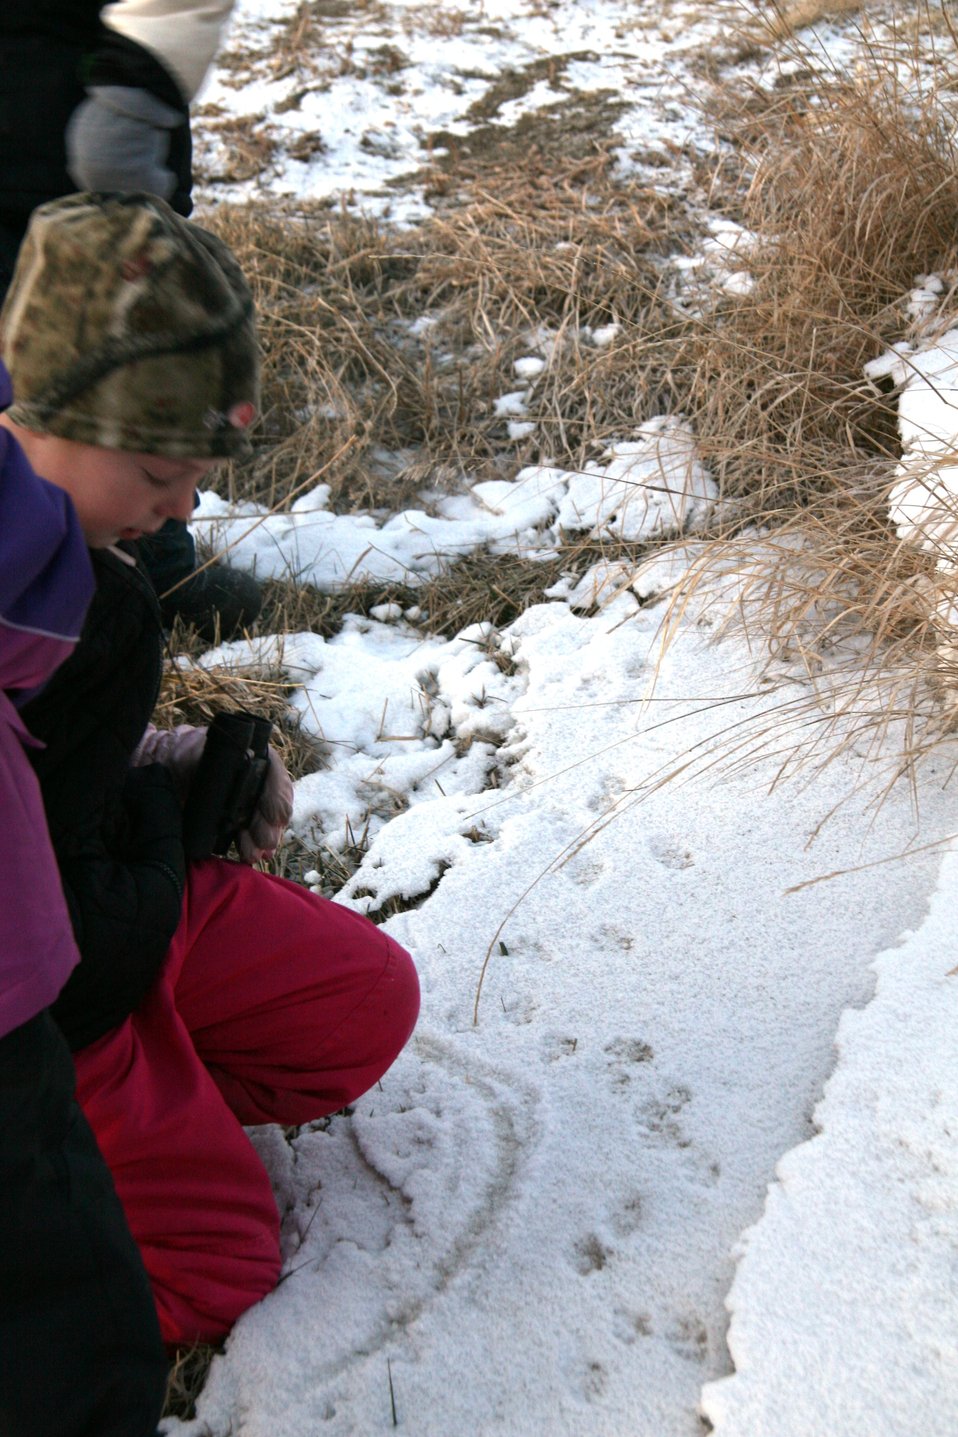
Spotting Tracks!

These young paticipants spotted some tracks in the snow!